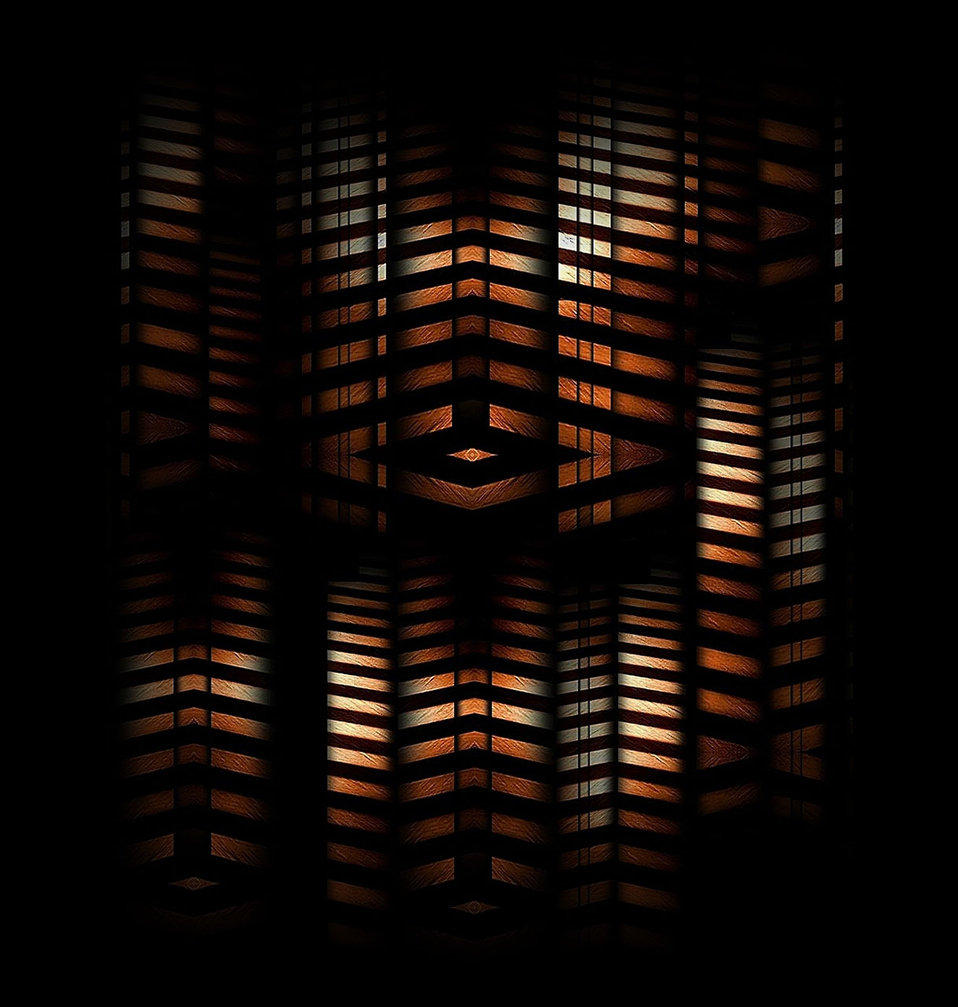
Symbol of coziness

Sign of comfort.